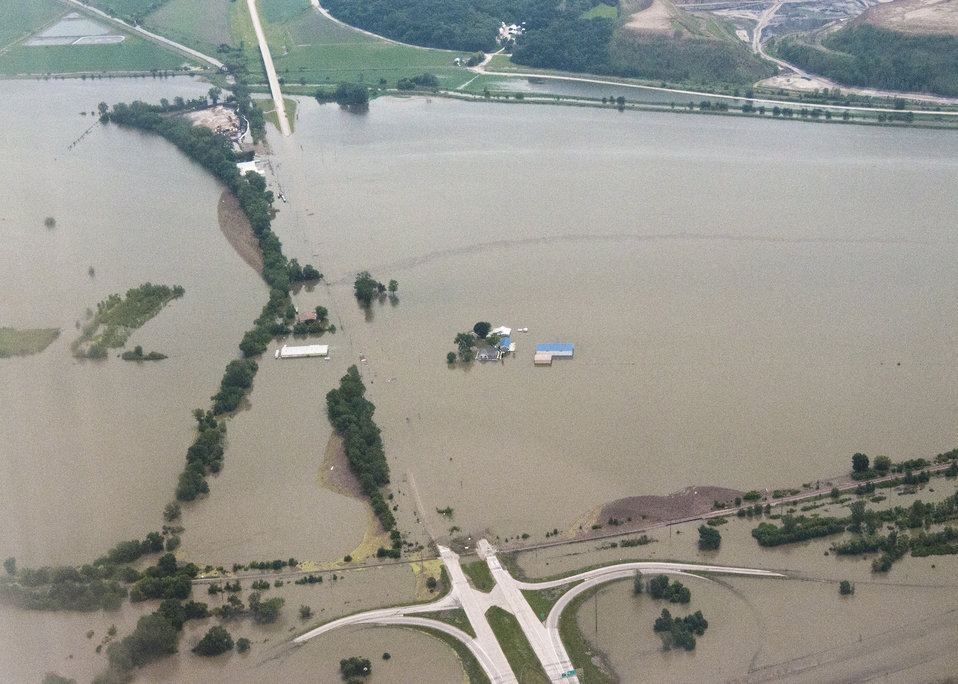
The Missouri river flooded hundreds of acres in Nebraska and Iowa. Agriculture Secretary Tom Vilsack visited the area on Friday, June 17, 2011, and spoke to agriculture producers and community leaders. The goal of the meetings was to get a firsthand look and provide that information back to Washington necessary to better deliver disaster programs expeditiously to effectively respond to this disaster. The United States Department of Agriculture agencies have programs to assist producers as they assess recovery efforts to assist with recovery in rural areas reeling from a natural disaster. USDA and the entire federal family have been working with state and local officials to provide relief to residents, farmers, ranchers and businesses.